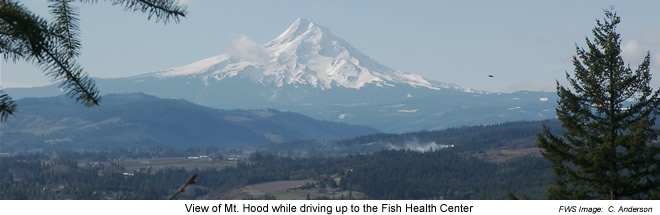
View of Mt. Hood from Lower Columbia River Fish Health Center